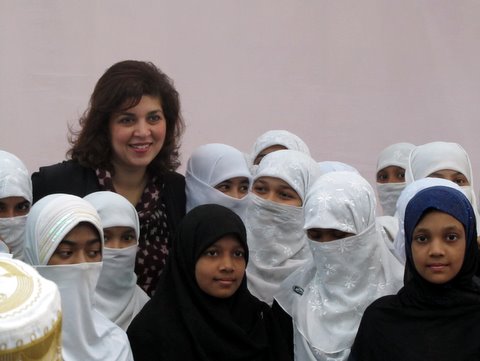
Special Representative Pandith Meets With Bangladeshi Students

Special Representative Farah Pandith meets with students in Dhaka, Bangladesh, on November 12, 2010.